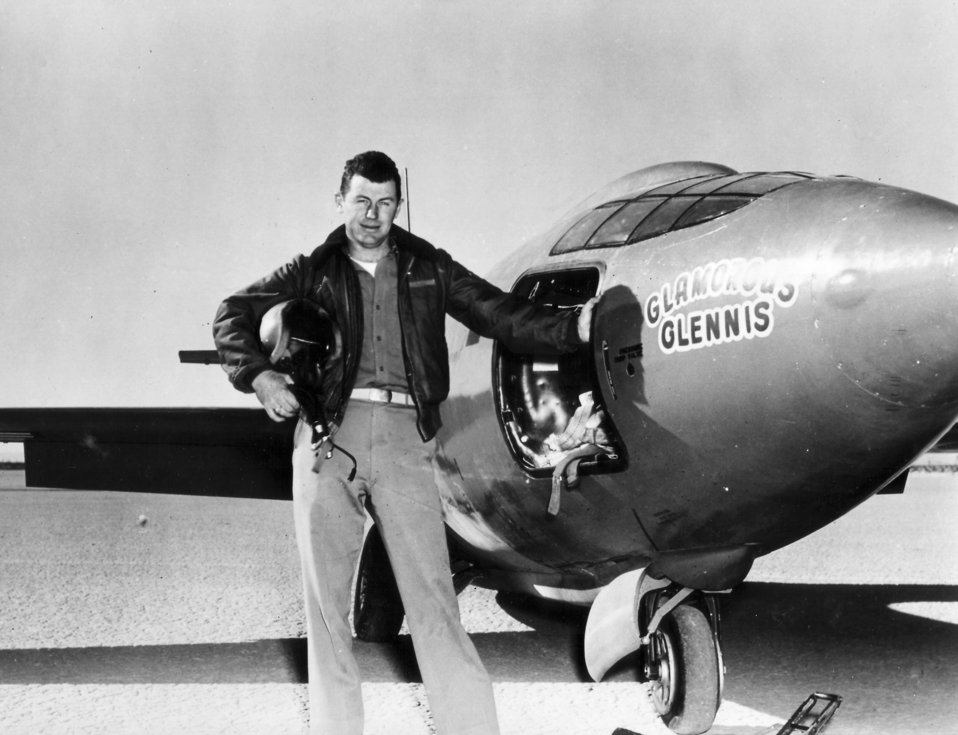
Capt. Charles E. Yeager

1940's -- Capt. Charles E. Yeager (shown standing next to the Air Force's Bell-built X-1 supersonic research aircraft) became the first man to fly faster than the speed of sound in level flight on October 14, 1947.